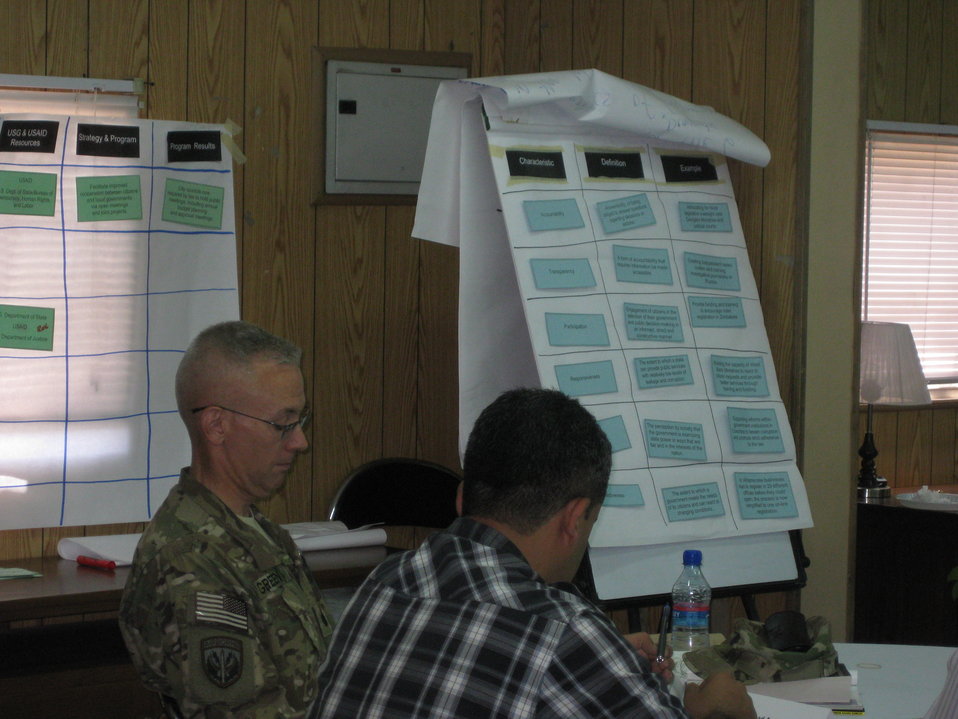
Afghan Youth Voices 024